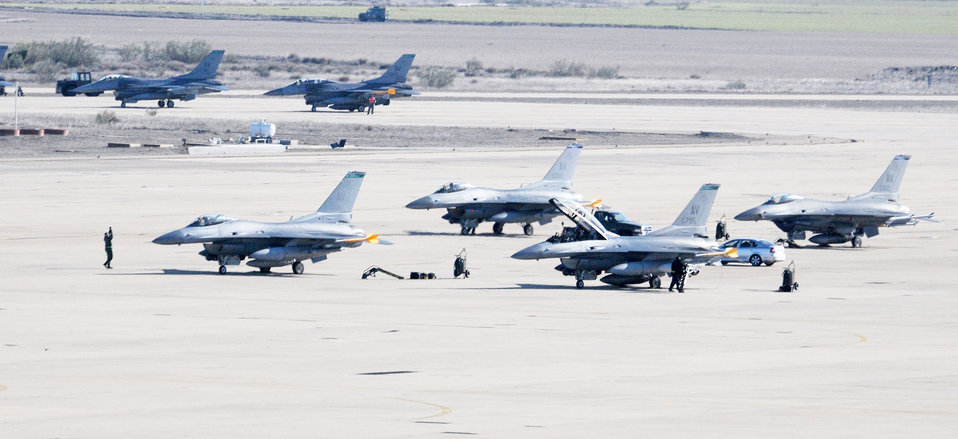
Airmen train in Spain

Airmen from the 555th Aircraft Maintenance Unit prepare jets for takeoff Feb. 1, 2010, at Zaragoza Air Base, Spain. The 555th AMU Airmen deployed to Spain to support training operations for the 555th Fighter Squadron pilots.